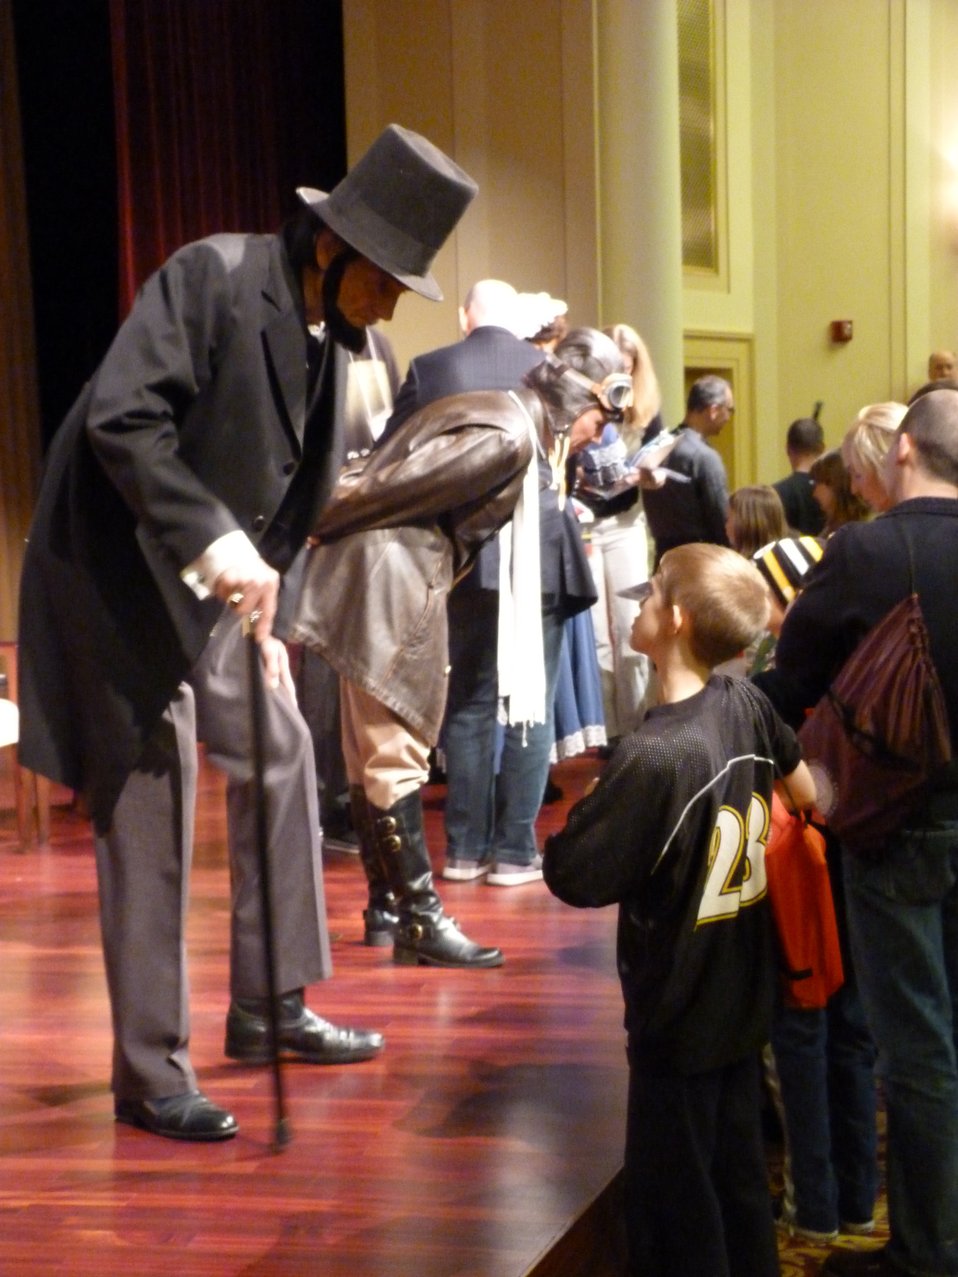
Rotunda Sleepover

Rotunda Sleepoverr; Photo provided by The Foundation for the National Archives